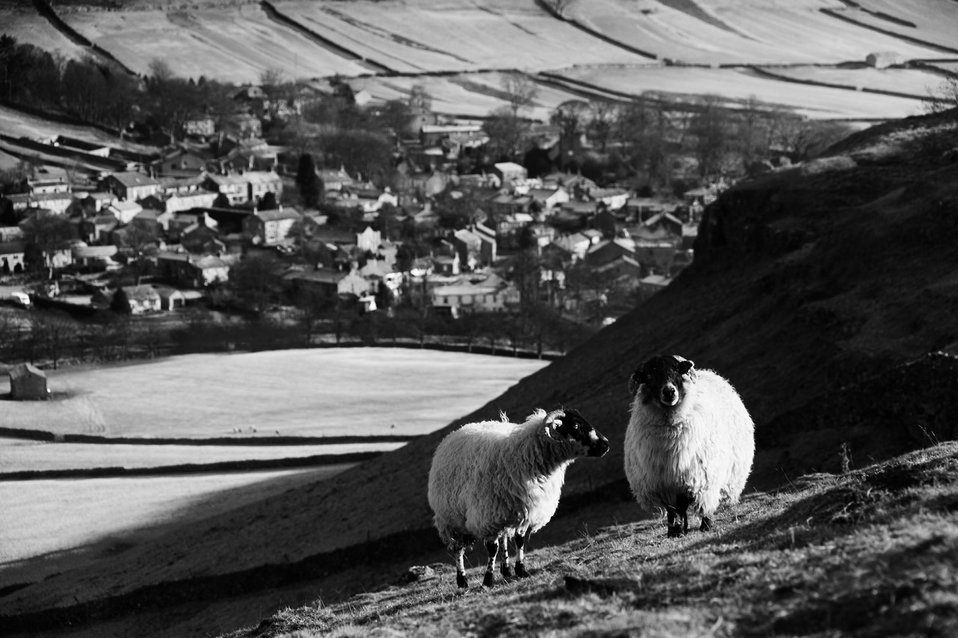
Yorkshire dales in black and white.